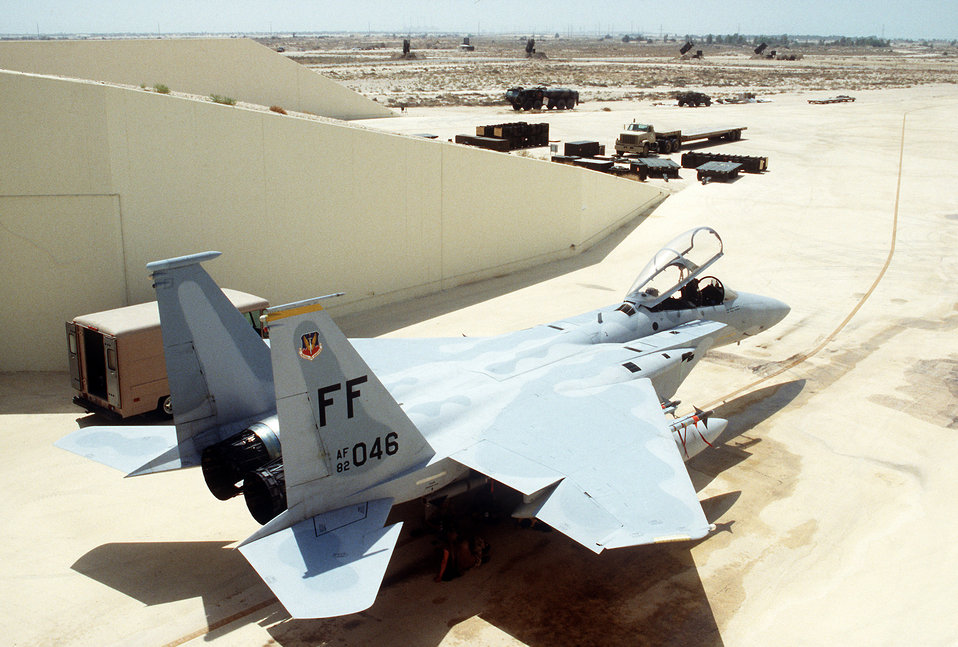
F-15D Eagle aircraft sits in a revetment

1990's -- A 1st Tactical Fighter Wing F-15D Eagle aircraft sits in a revetment during Operation Desert Shield. Four Patriot surface-to-air missile launchers are deployed in the background.